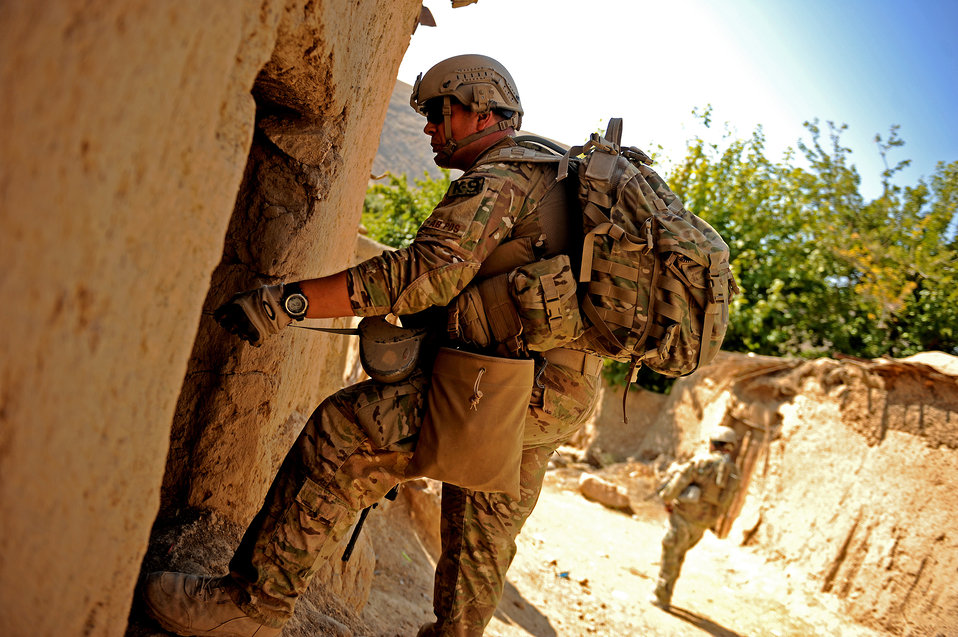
Maintaining security

Staff Sgt. Martin Ratkowski and his military working dog Tosca search a home for home-made explosives Oct. 20, 2011, in a local village in the district of Mizan, Afghanistan. Ratkowski is a military working dog handler attached to Provincial Reconstruction Team Zabul to provide explosives searches.